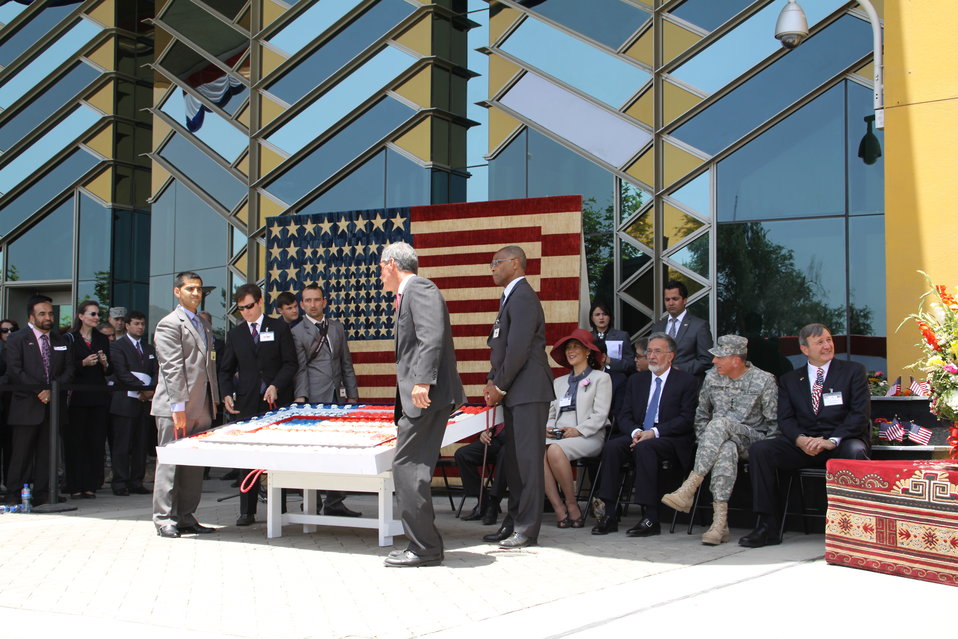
Kabul Official July 4th Celebration